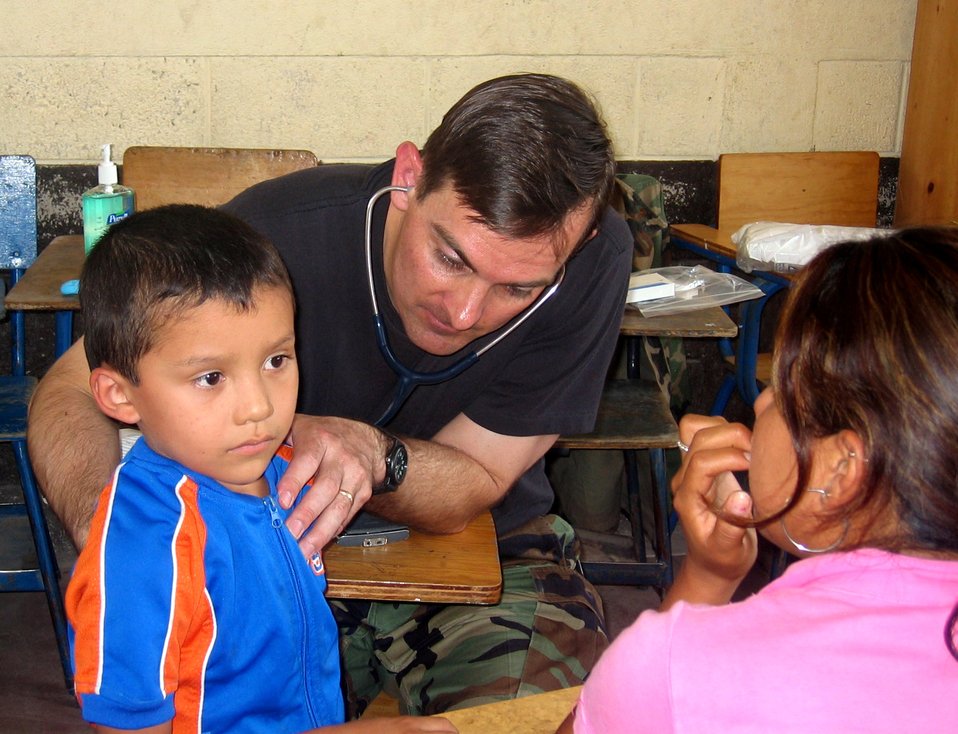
Air Force medics provide medical relief in Guatemala

Maj. (Dr.) Michael Stevens, a pediatrician from Peterson Air Force Base, Colo., listens to a Guatemalan child's heartbeat, as the boy's mother looks on. Doctor Nelson was part of a team of 13 medical professionals from Air Force Space Command that was sent to Guatemala for a 10-day humanitarian mission in April. The team saw more than 8,000 patients during that time.